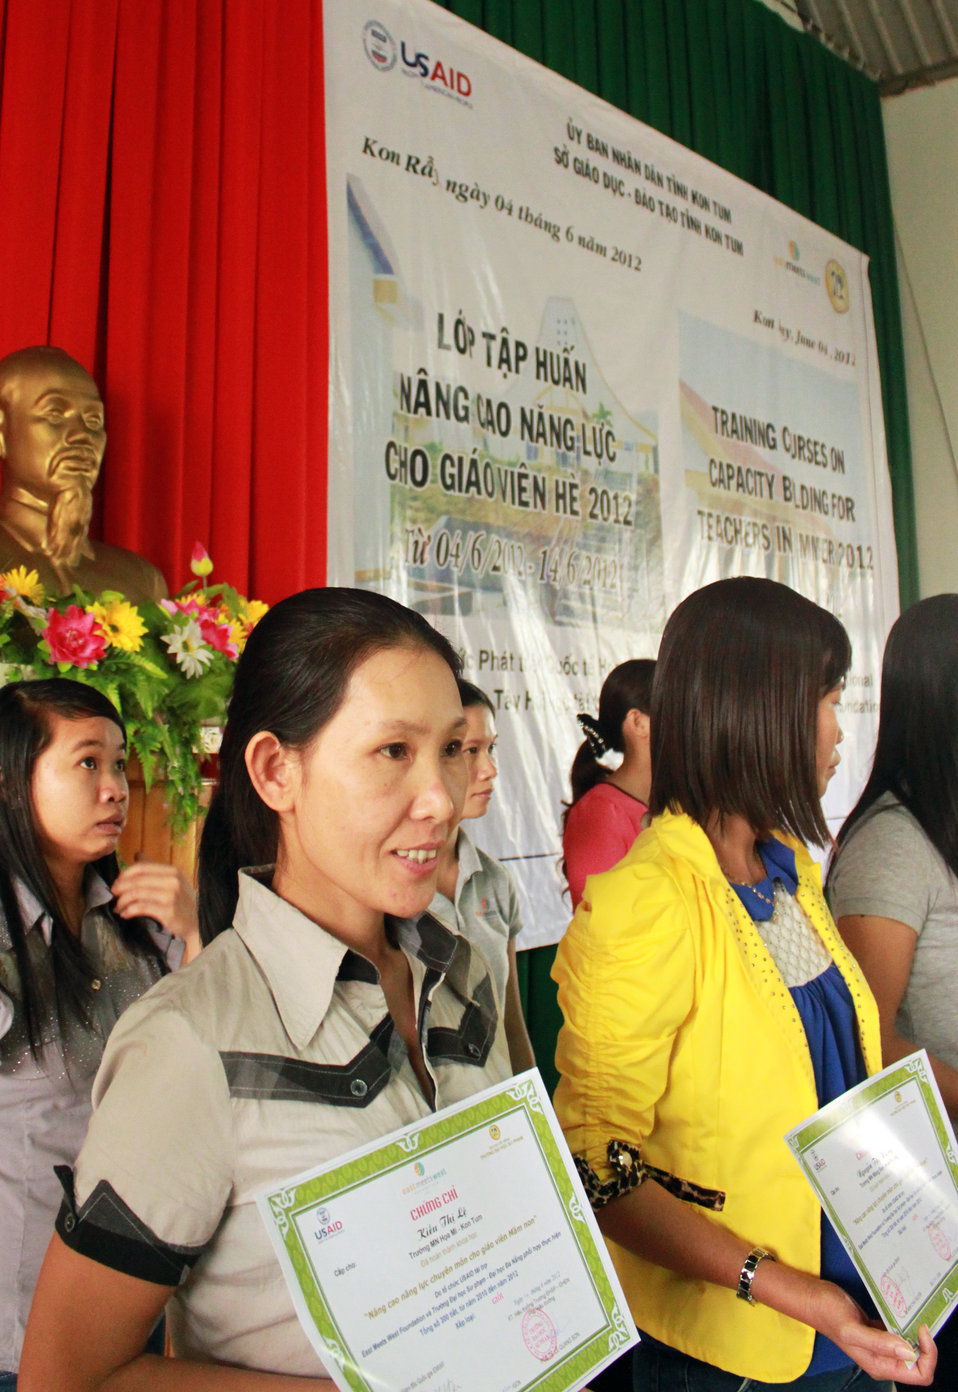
Teachers in Kon Tum receives certificates in recognition of their improved skills in art, linguistics, mathematics, nutrition and developing teaching materials